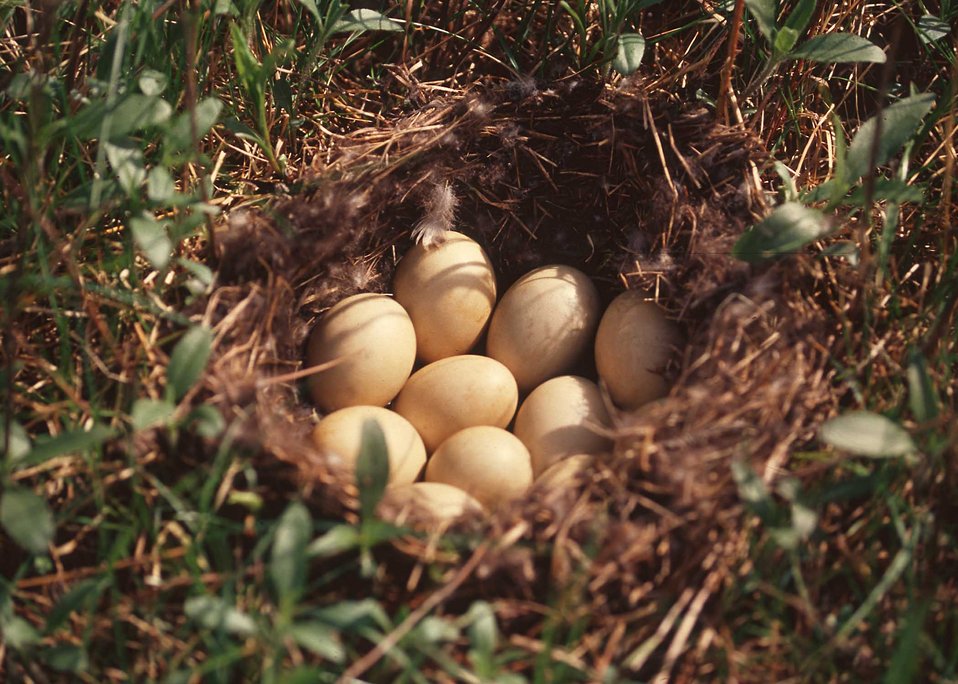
Nest located on land where NRCS has provided technical assistance to landowners in the prairie pothole region of northeastern South Dakota.